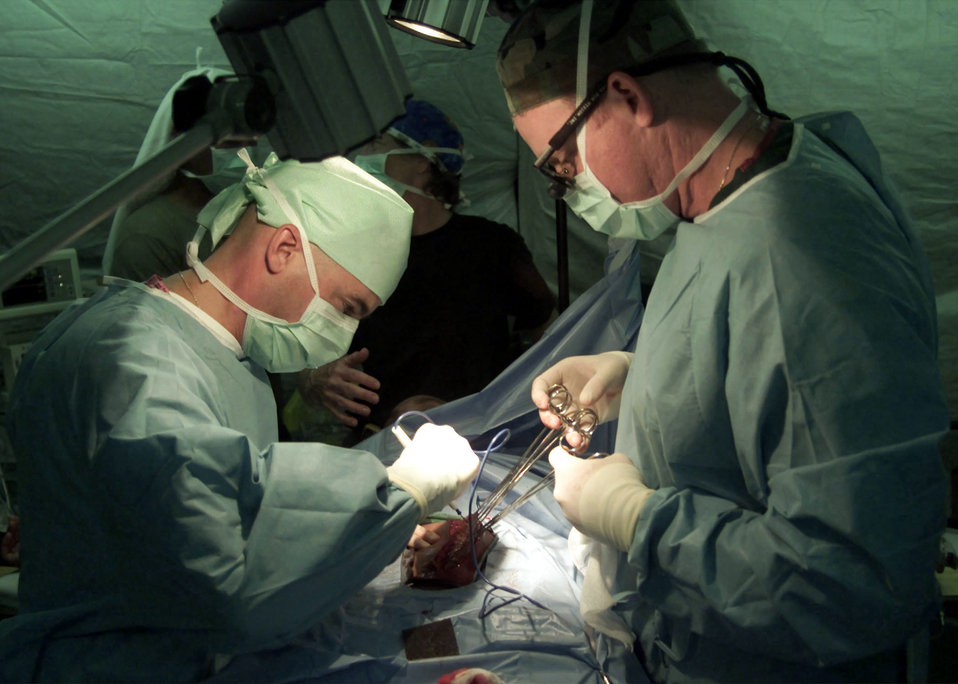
Keloid excision

OPERATION ENDURING FREEDOM -- Navy Lt. Cmdr. David Cline (left) from the Navy Support Facility Medical in the Indian Ocean, and Maj. Jerry Cohn from the 81st Medical Surgical Squadron at Keesler Air Force Base, Miss, perform a Keloid excision while deployed in support of Operation Enduring Freedom.